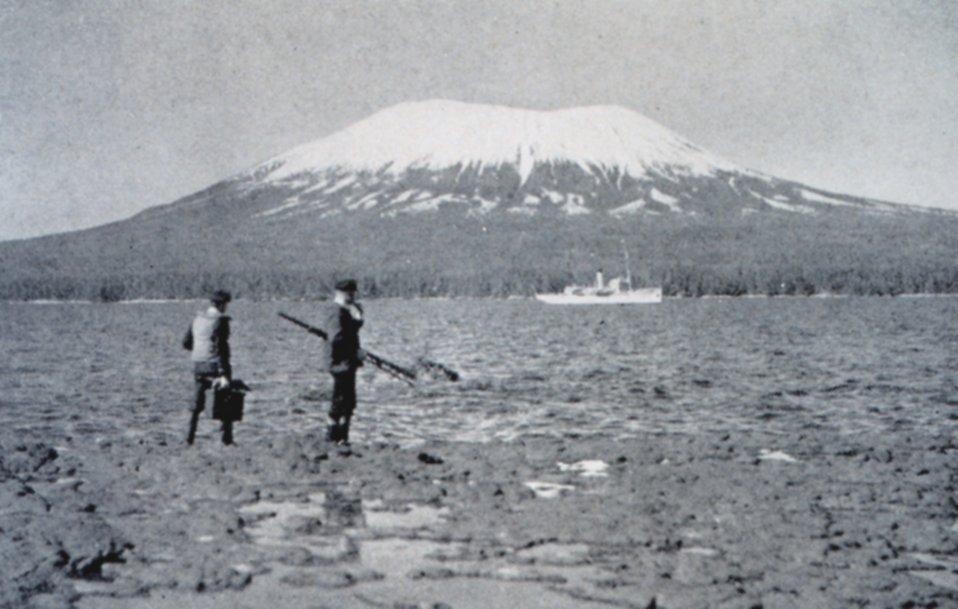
Mount Edgecombe and the Coast Guard Cutter TALAPOOSA